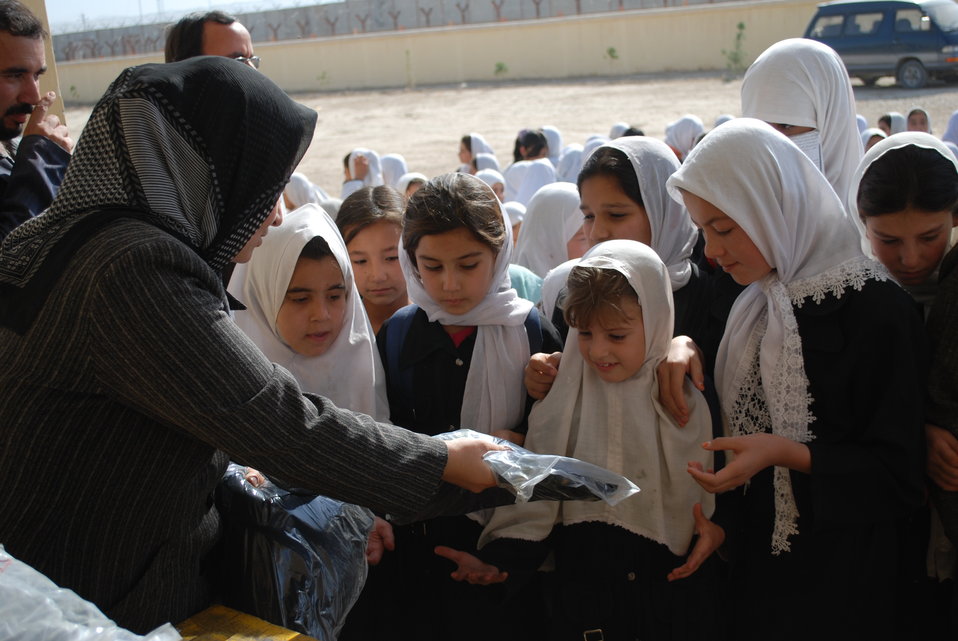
'On the Road' in Balkh Province